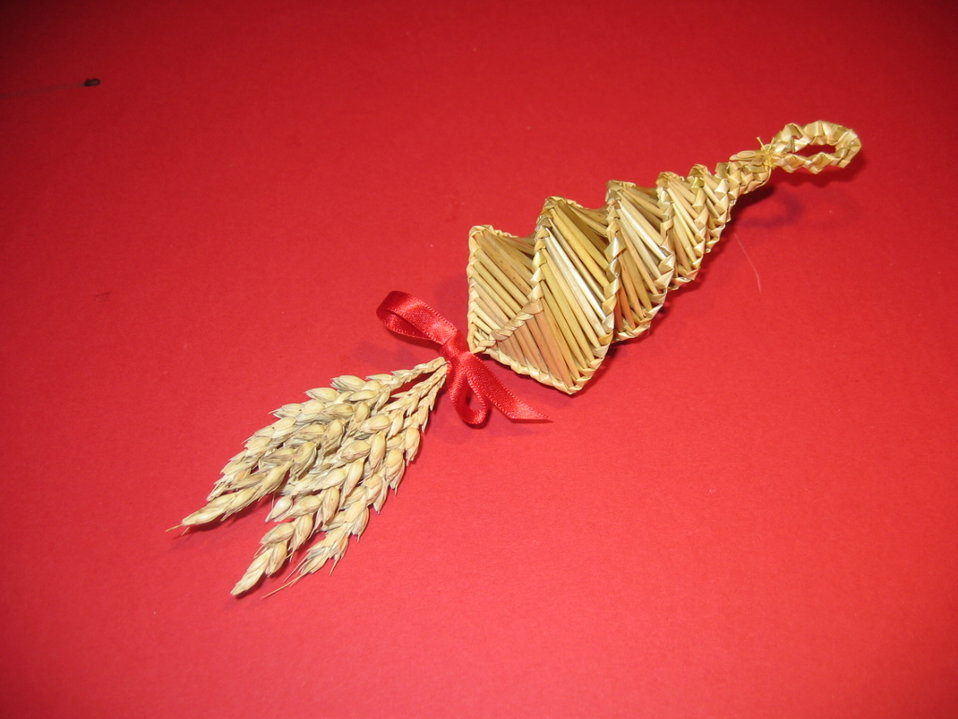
Corn dolly Yorkshire Spiral